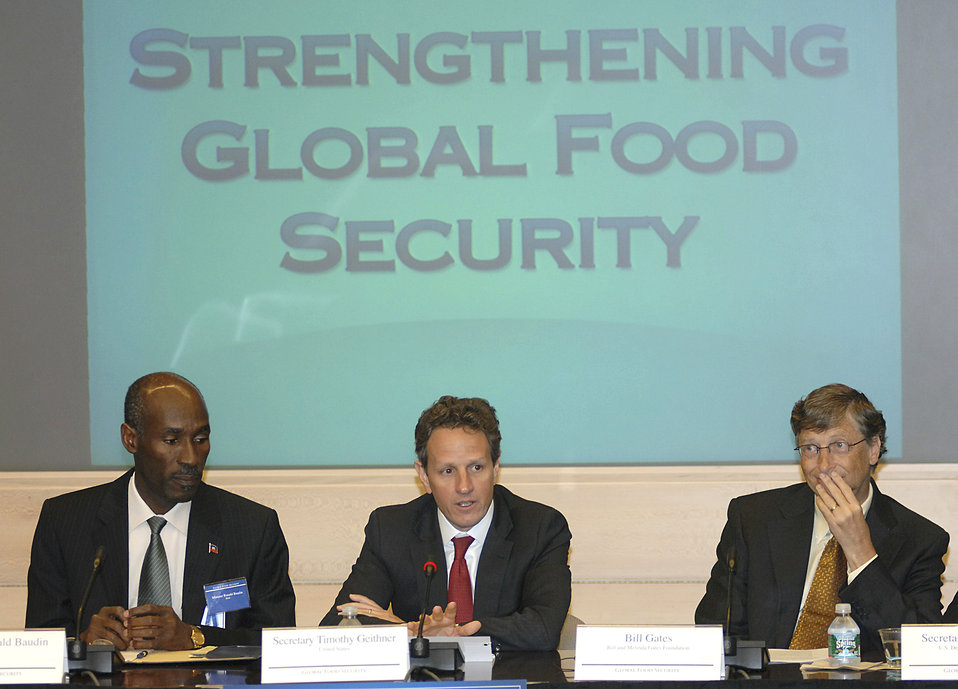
Announcement on International Commitment to Fight Global Hunger and Poverty, 4/22/10

Treasury Secretary Timothy Geithner and Bill Gates, Co-chair of the Bill & Melinda Gates Foundation, at announcement for international commitment to fight global hunger and poverty at Treasury Department April 22, 2010.